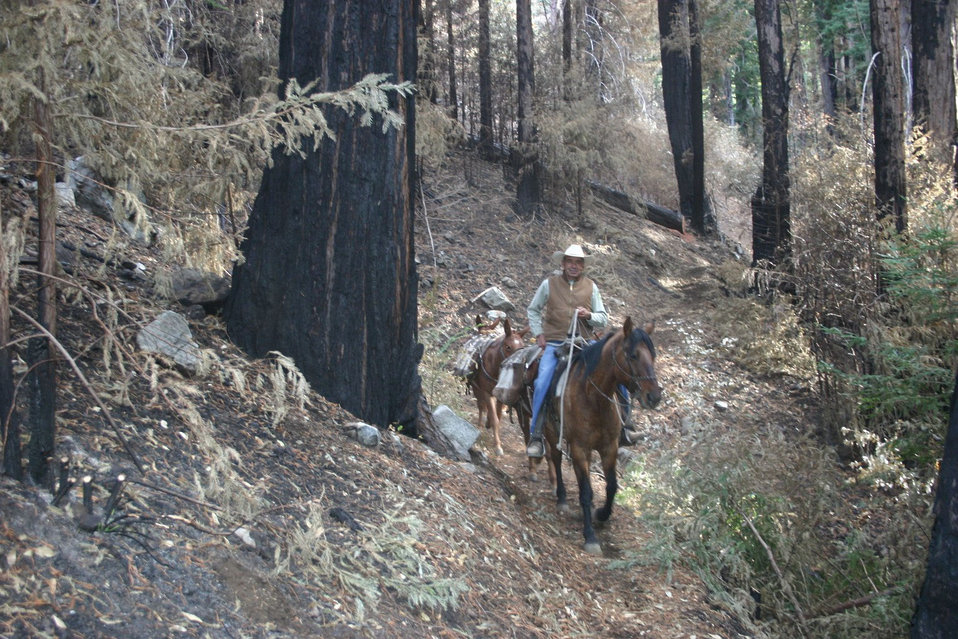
Mule strings on Pine Ridge Trail in the Ventana Wilderness (post fires 2008), in the Los Padres National Forest, Monterey County, CA., on November 21, 2008.